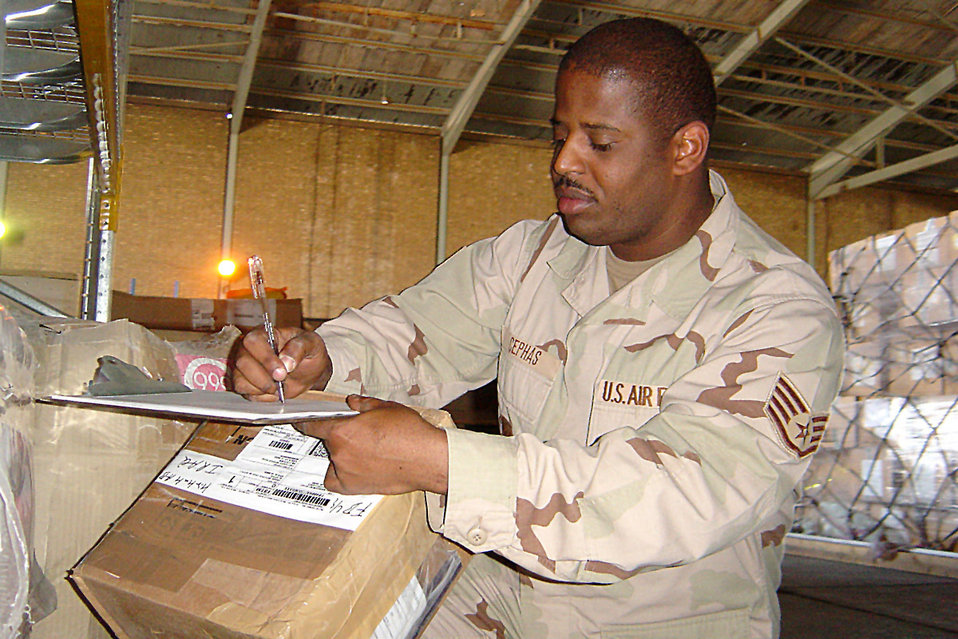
Demand of supply

KIRKUK AIR BASE, Iraq -- Staff Sgt. Michael Cephas checks the stock numbers on some items in the supply warehouse here. Cephas is assigned to the 506th Expeditionary Logistics Readiness Squadron supporting Operation Iraqi Freedom.